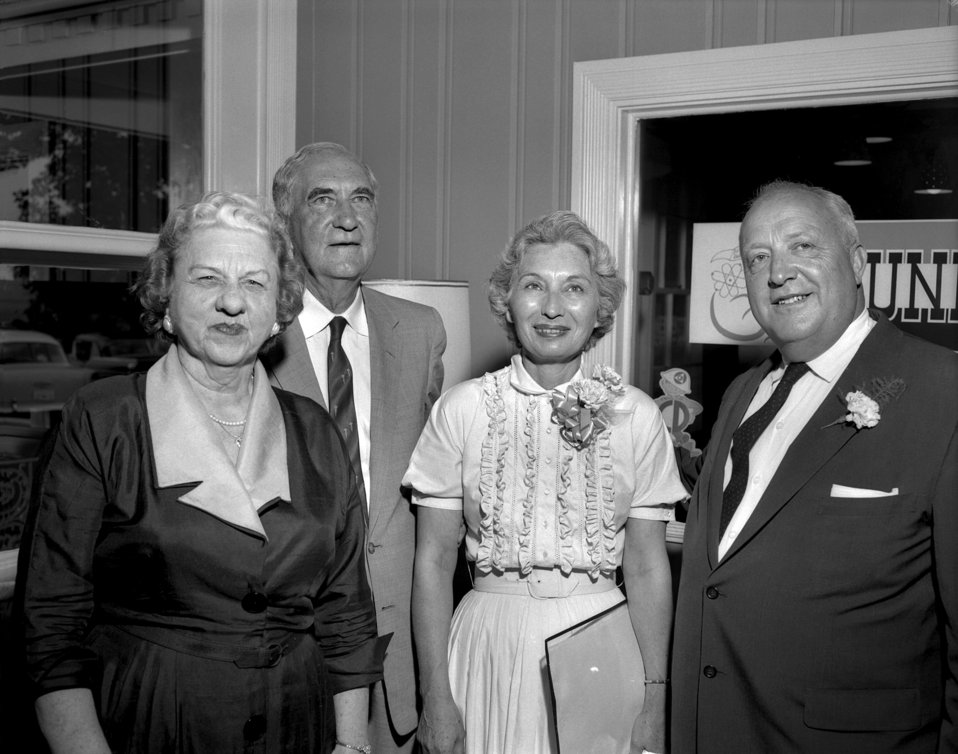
Independence Day Ceremonies Oak Ridge

60-0507

DOE photo by Ed Westcott Independence Day Ceremonies Mayor Bissell and Guest Oak Ridge Tennessee 6/4/1960